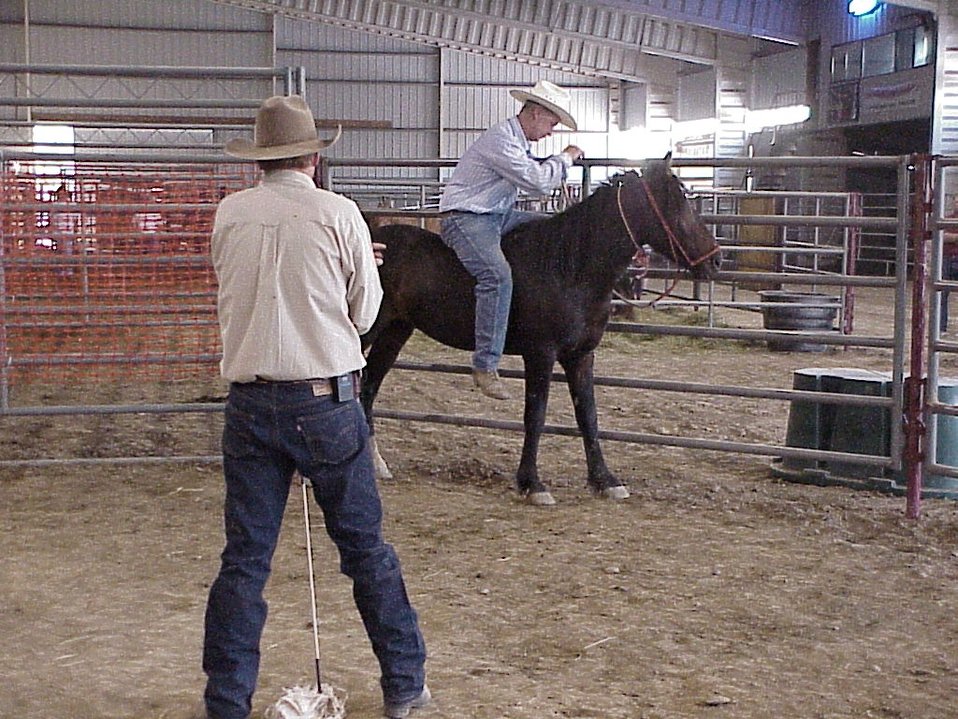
Horse Gentler Mario Johnson Lewiston Wild Horse and Burro Adoption Program Auction WHB indoor auction Cottonwood Field Office UCSC Upper Columbia Salmon Clearwater District